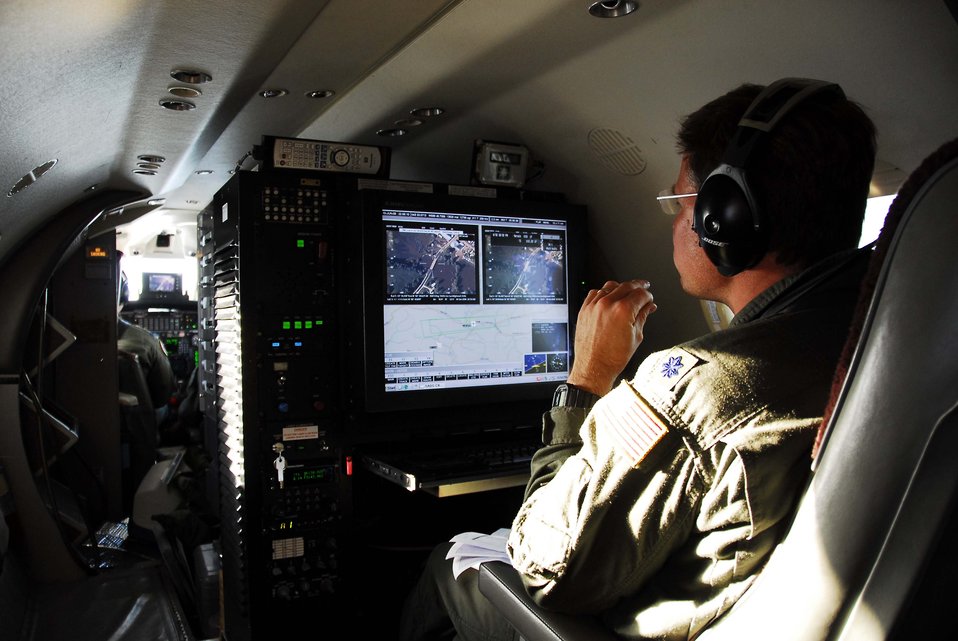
Wisconsin Flood Relief Initial Awareness Assessment

Lt. Col. Tim Howell operates a console aboard an RC-26 aircraft specifically designed for viewing and transmitting high-quality video and still imagery to military and civilian operations centers in real-time. Colonel Howell is a mission system operator from the 186th Air Refueling Wing in Meridian, Miss.